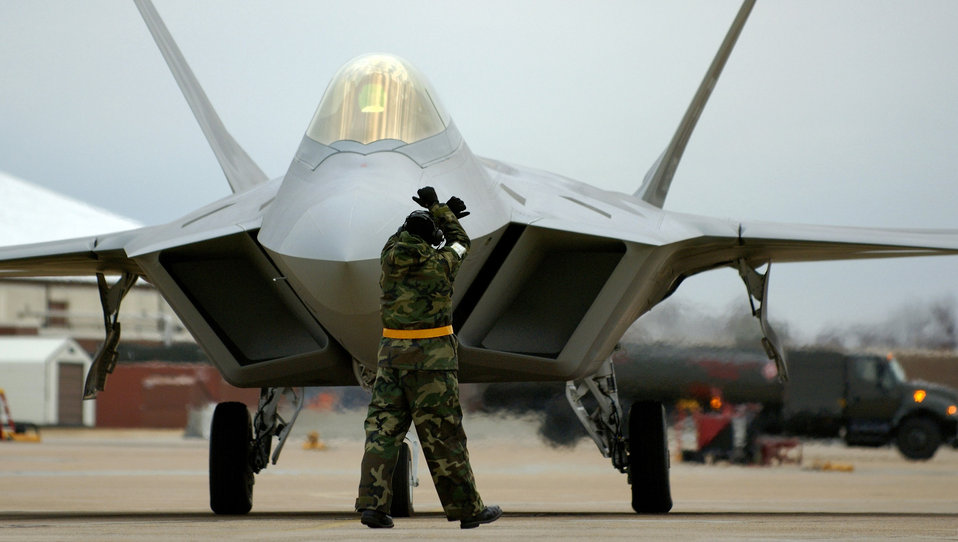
Combat ready

LANGLEY AIR FORCE BASE, Va. (AFPN) -- Crew chief Staff Sgt. Adam Murtishaw guides an F-22A Raptor into its parking space after a Dec. 14 mission. The 27th Fighter Squadron earned initial operating capability today, which means the stealth jet is combat ready. Sergeant Murtishaw is with the 27th Aircraft Maintenance Unit.